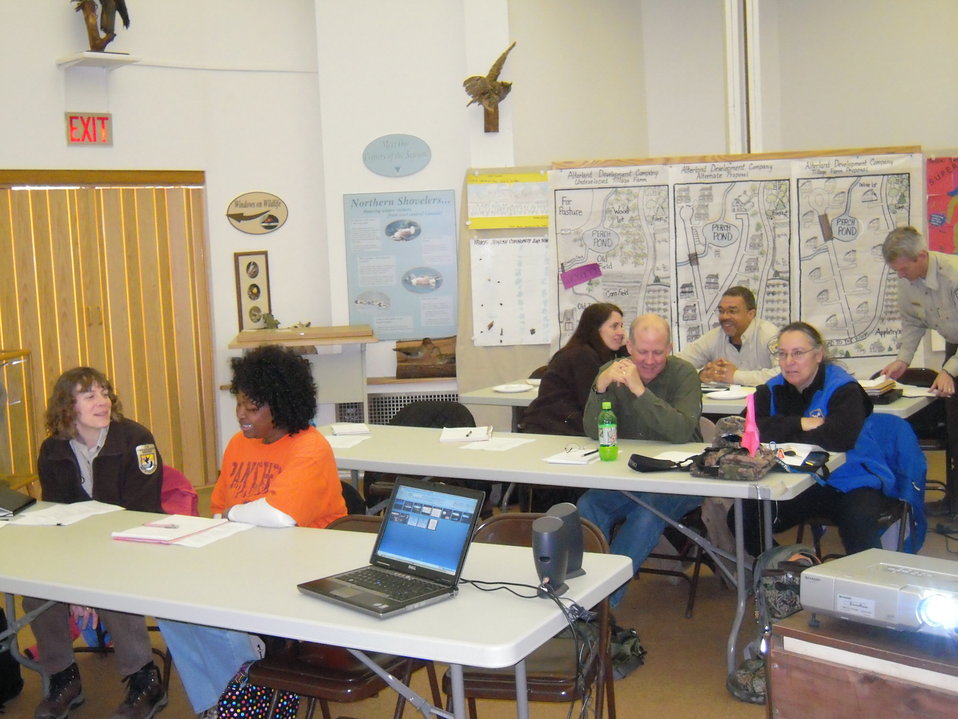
Salt Marsh workshop

Discussion at the Salt Marsh workshop.